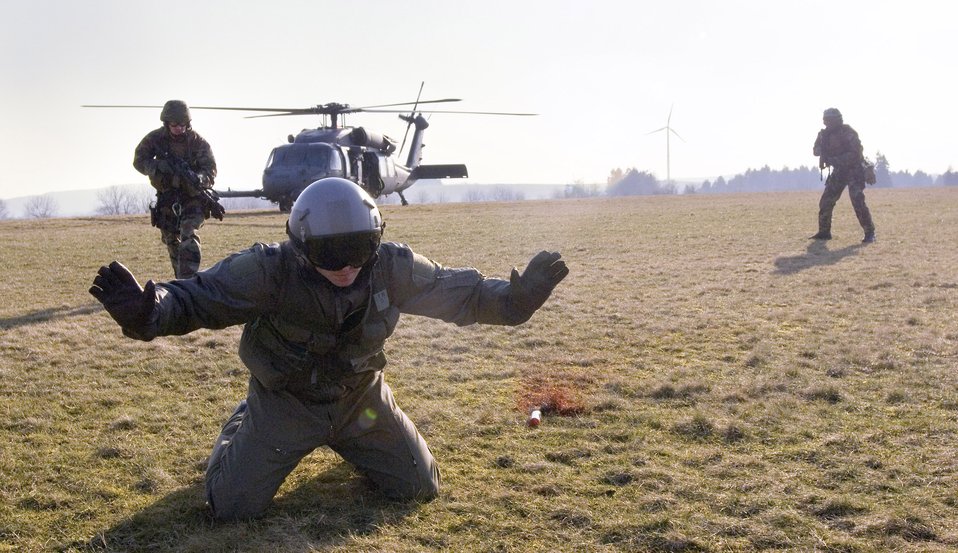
Pilot extraction

During combat search and rescue training Capt. Doug Galloway waits to be rescued as pararescuemen approach with caution before authenticating and extracting the pilot in an HH-60 Pave Hawk in Marpingen Germany, Monday, March 13, 2006. The 81st Fighter Squadron from Spangdahlem Air Base, Germany and the 56th Rescue Squadron from Naval Air Station, Keflavik, Iceland trained together here. Captain Galloway is an A-10 fighter pilot from Fort Walton Beach, Fla., with the 81st Fighter Squadron at Spangdahlem Air Base, Germany.